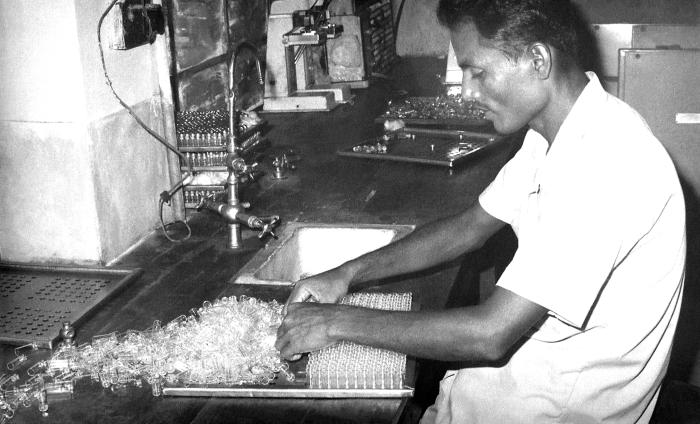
This image depicted a technician in a Bangladesh laboratory who was in the process of sorting through a collection of glass vials, which were used to contain smallpox vaccine. The photograph was taken by Dr. Stan Foster, EIS, Officer, Class of 1962, while he was part of the worldwide Global Smallpox Eradication Campaign of the late 1960s, early 1970s.